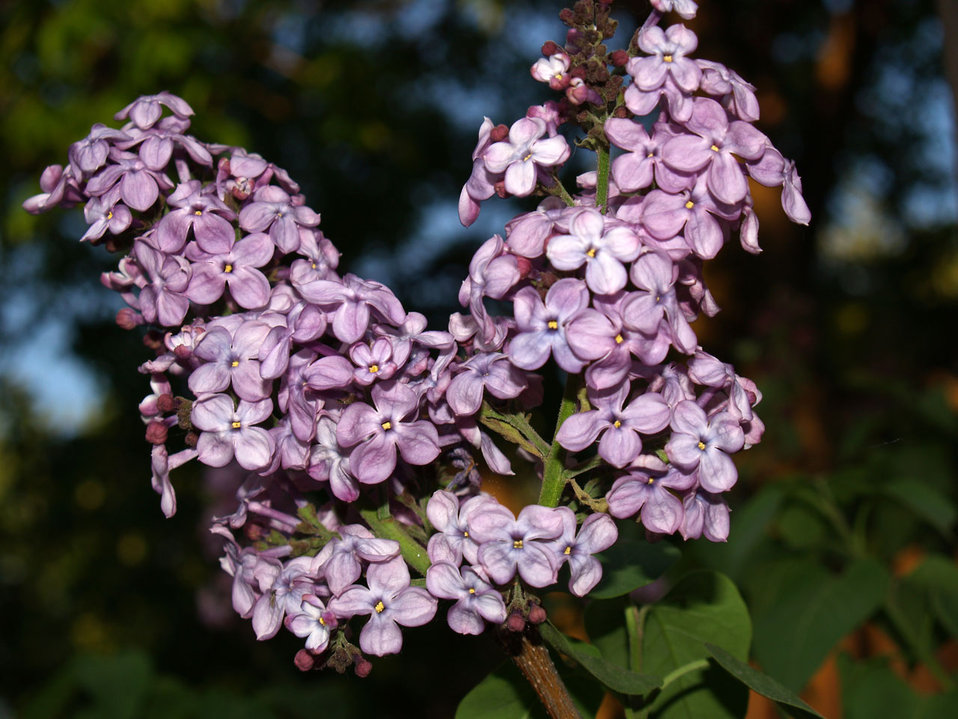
Lilac flower.